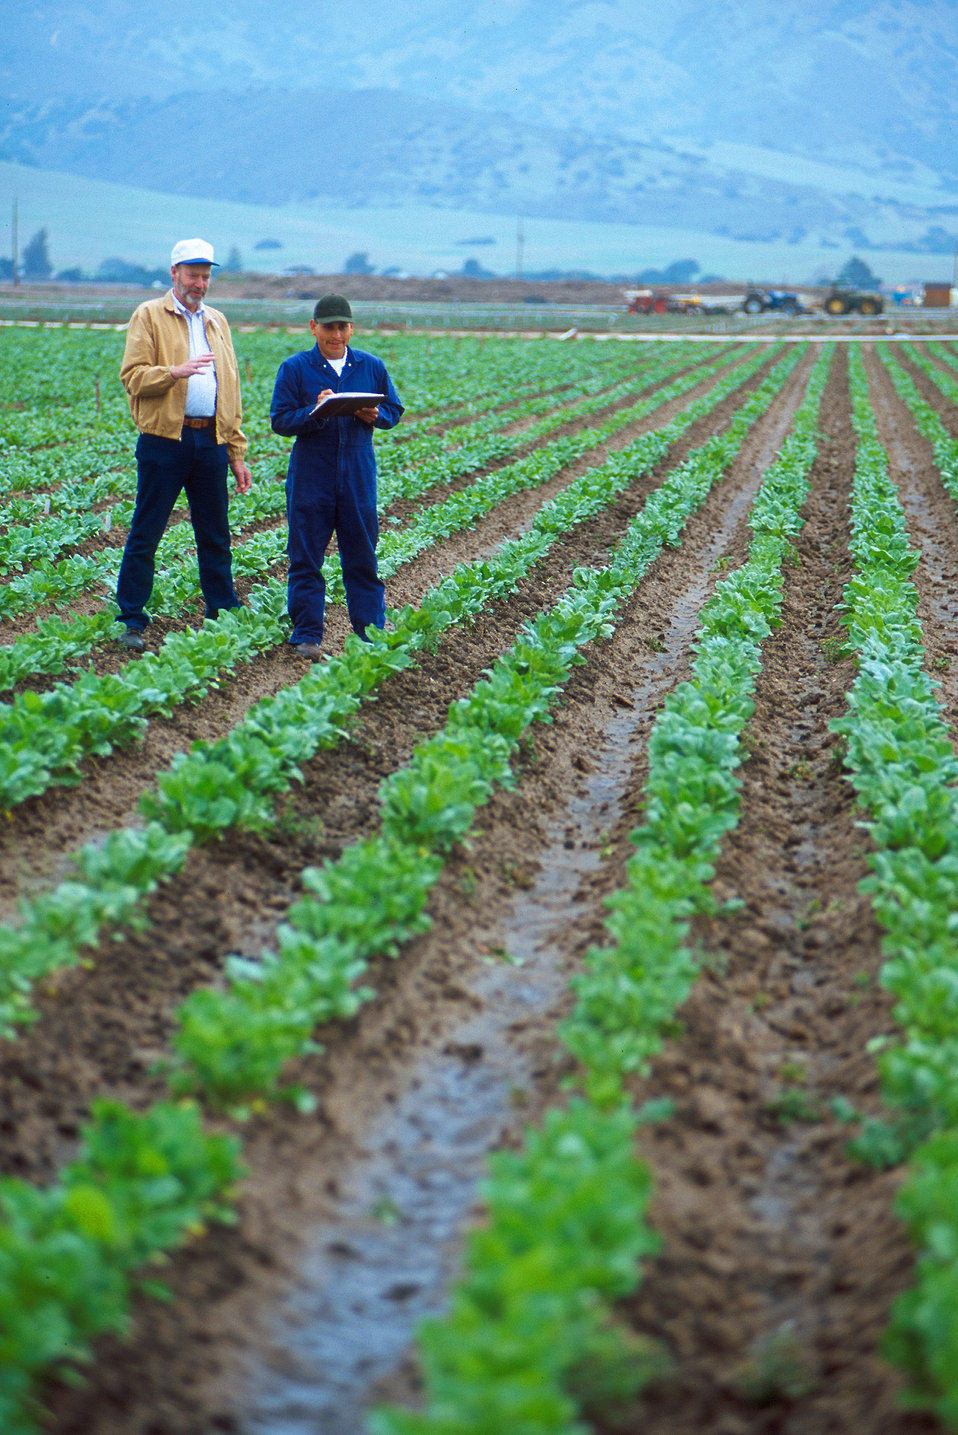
U.S. Department of Agriculture (USDA) Agricultural Research Service (ARS) geneticist Robert Lewellen and technician Jose Orozco evaluate sugar beet breeding lines for disease resistance in Salinas, CA.